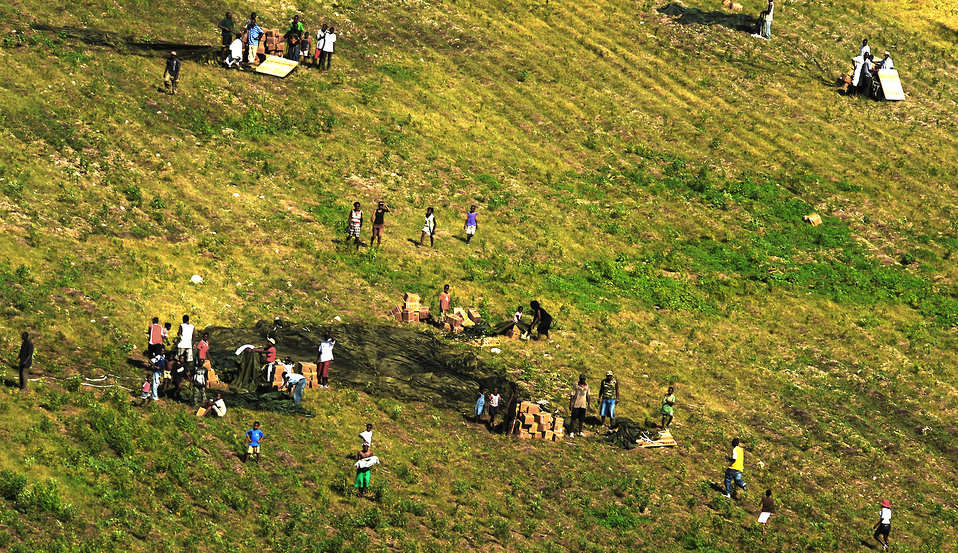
18 AF officials call in their best for air delivery to Haiti

Haitians collect bottles of water and rations of food air delivered by a Charleston AFB C-17 Globemaster III aircraft Jan. 23, 2010, in the outlying area of Port-au-Prince, Haiti. The mission was flown as part of Operation Unified Response to save lives and bring relief to suffering people in Haiti.